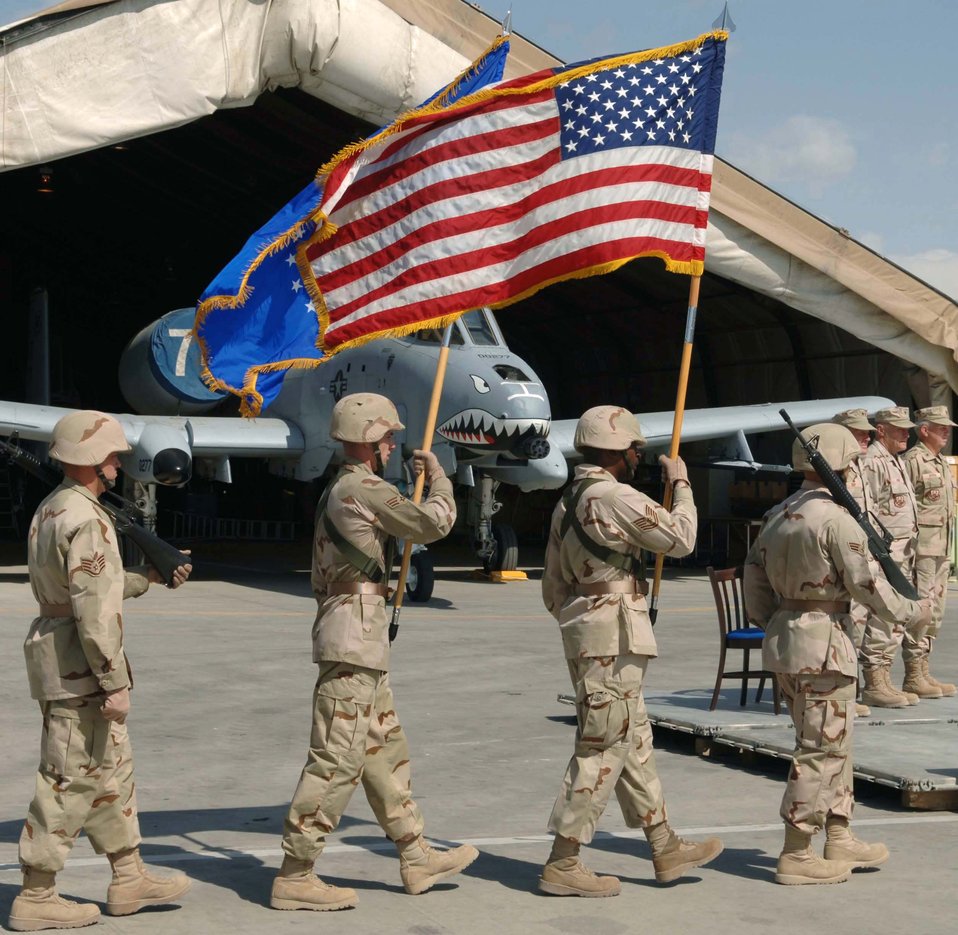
Combat colors

BAGRAM AIR BASE, Afghanistan -- (From left) Staff Sgt. Stephen Manley, Senior Airman Robert Welch, Tech. Sgt. Xavier Sanford and Senior Airman Gary McCormick present the colors during a change of command ceremony here May 15. Sergeant Sanford is assigned to the 455th Expeditionary Logistics Readiness Squadron, and Sergeant Manley and Airmen Welch and McCormick are assigned to the 455th Expeditionary Security Forces Squadron.